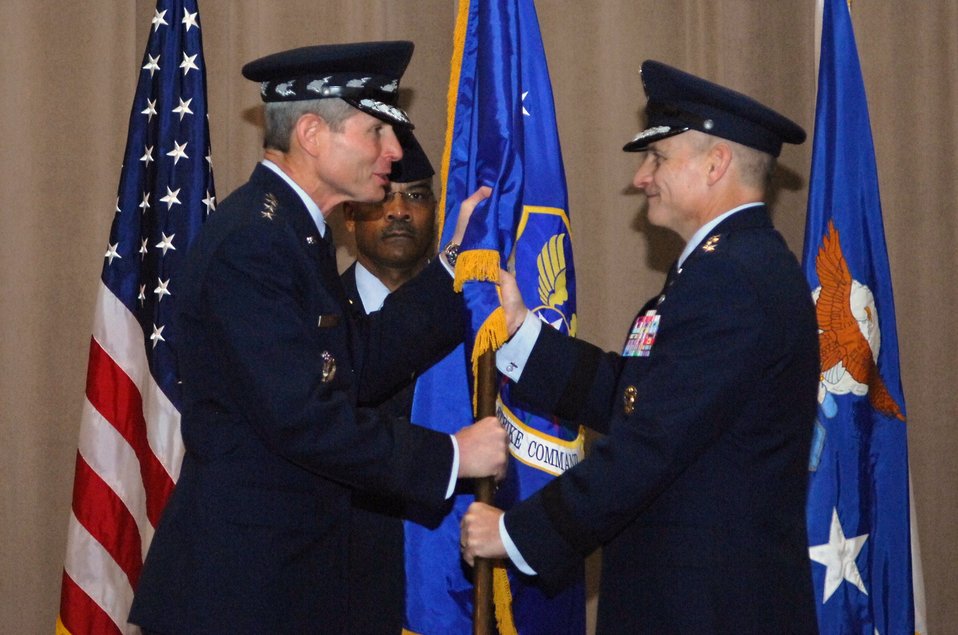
Air Force Global Strike Command gets new top leader

Air Force Chief of Staff Gen. Norton Schwartz passes the Air Force Global Strike Command guidon to Lt. Gen. James Kowalski Jan. 6, 2011, at Barksdale Air Force Base, La., as General Kowalski assumed command, becoming responsible for organizing, training and equipping all U.S. ICBM and nuclear-capable bomber forces. Command Chief Master Sgt. Jack Johnson serves in his role as guidon bearer.